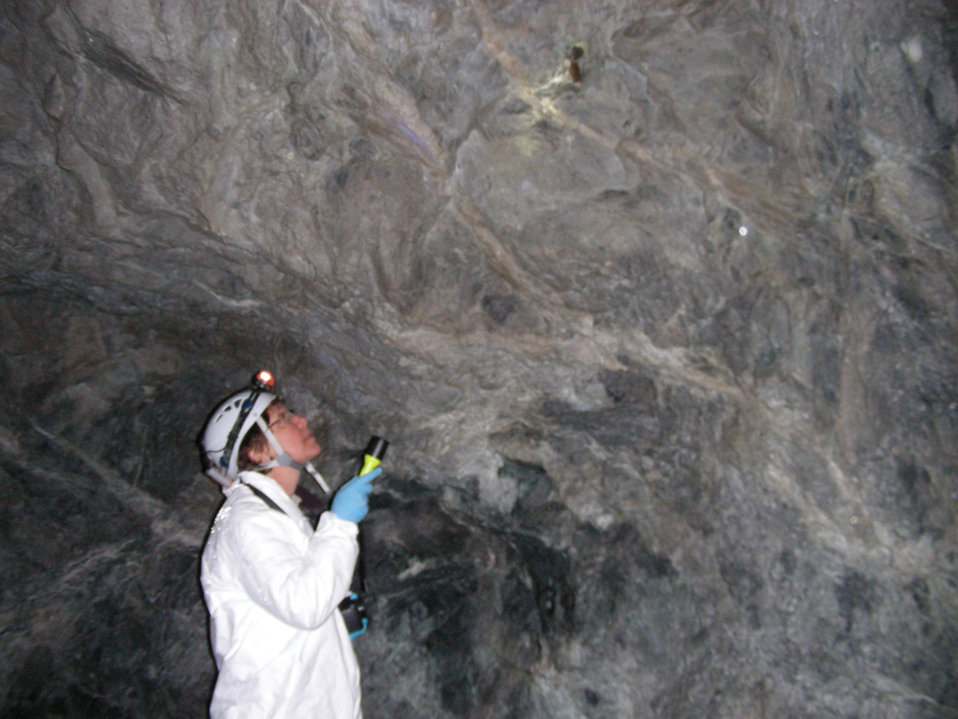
USFWS Biologist studying bat

Biologist looking at a little brown bat with white-nose syndrome in Greeley Mine, Vermont, March 26, 2009.